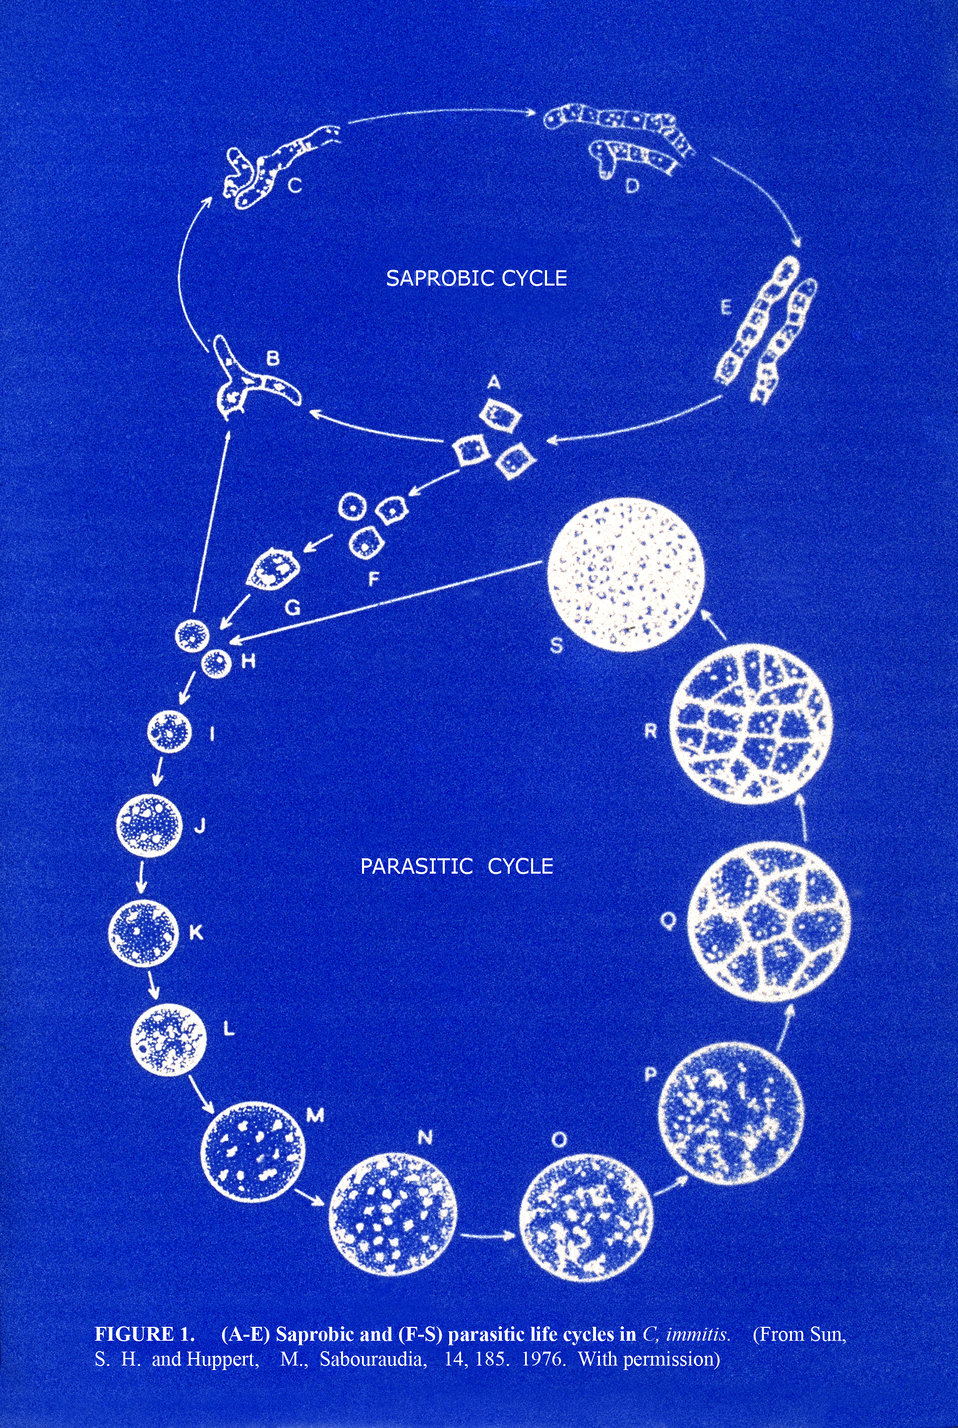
Illustration of dimorphic forms of Coccidioides immitis